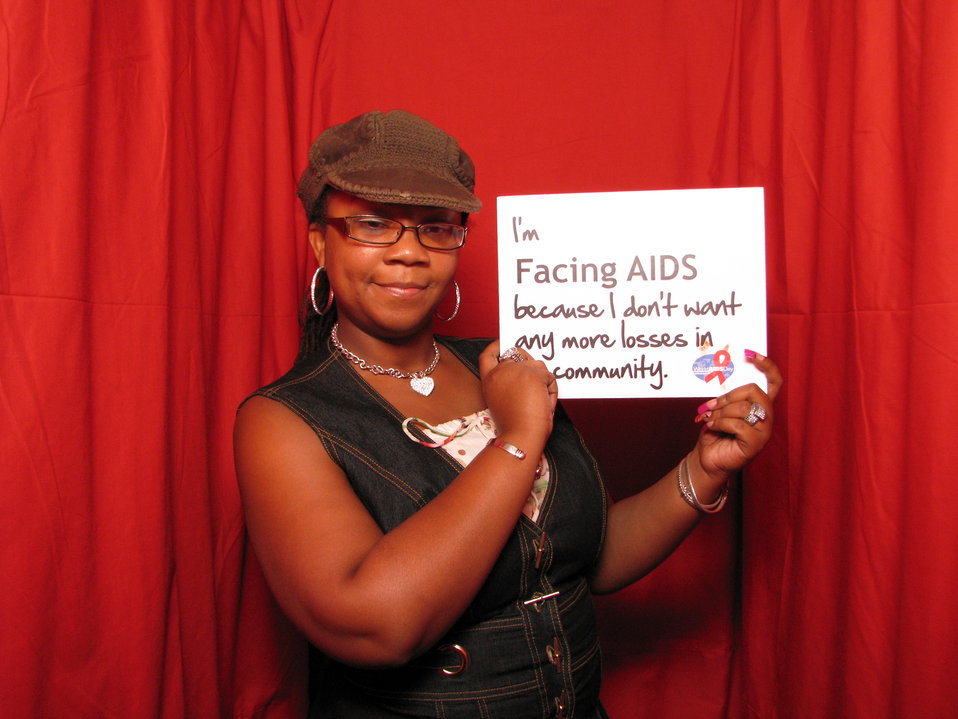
I'm FACING AIDS because I don't want any more losses in my community.

From the AIDS.gov photo booth at the U.S. Conference on AIDS, September 2010 (Orlando, FL).